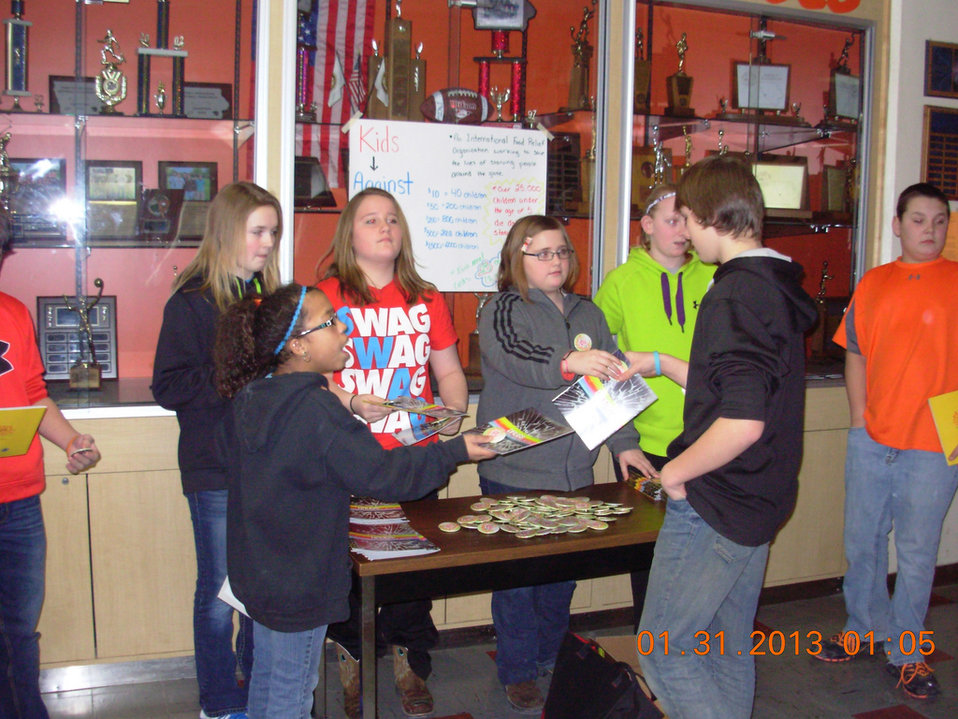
Iowa's SAFE Coalition, NDFW 2013

Van Buren County, IA. SAFE Coalition high school student run groups fighting issues of drug, alcohol, and tobacco abuse during NDFW 2013.